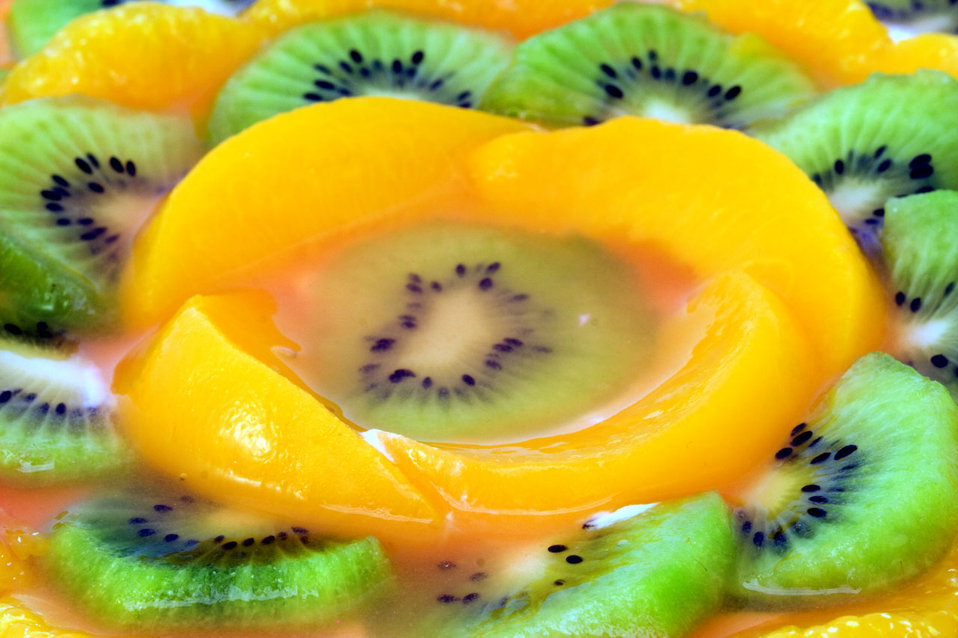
Cake

Fruit kiwi and apricot cake.